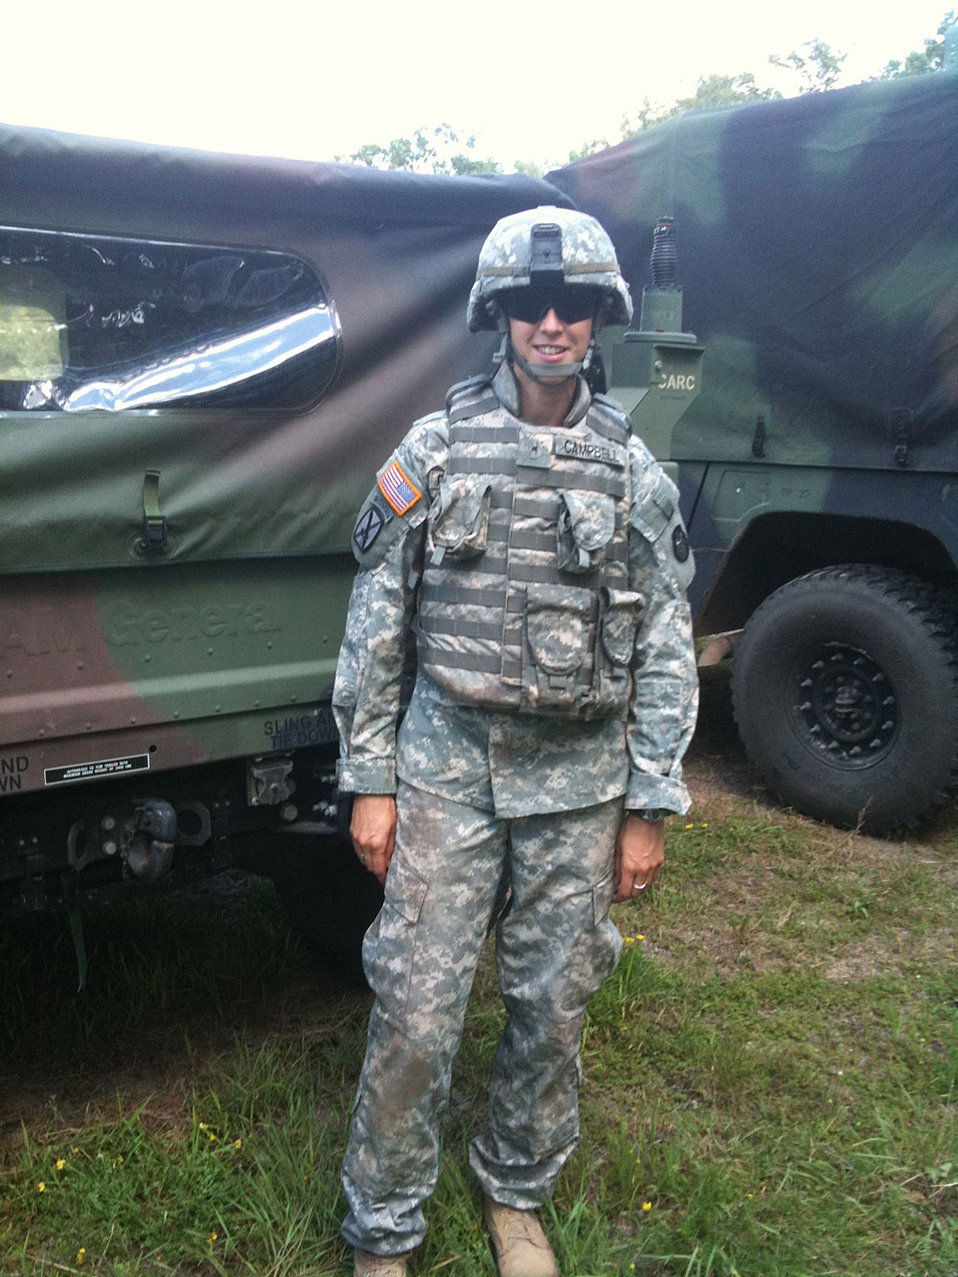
Jessica Campbell, a Cartographer with the Division of Realty in Region 3, has been in the U.S. Army National Guard since September 2002. She deployed to Afghanistan from January 2006 to April 2007 in support of Operation Enduring Freedom and is still serving in the U.S. Army National Guard in Minnesota.